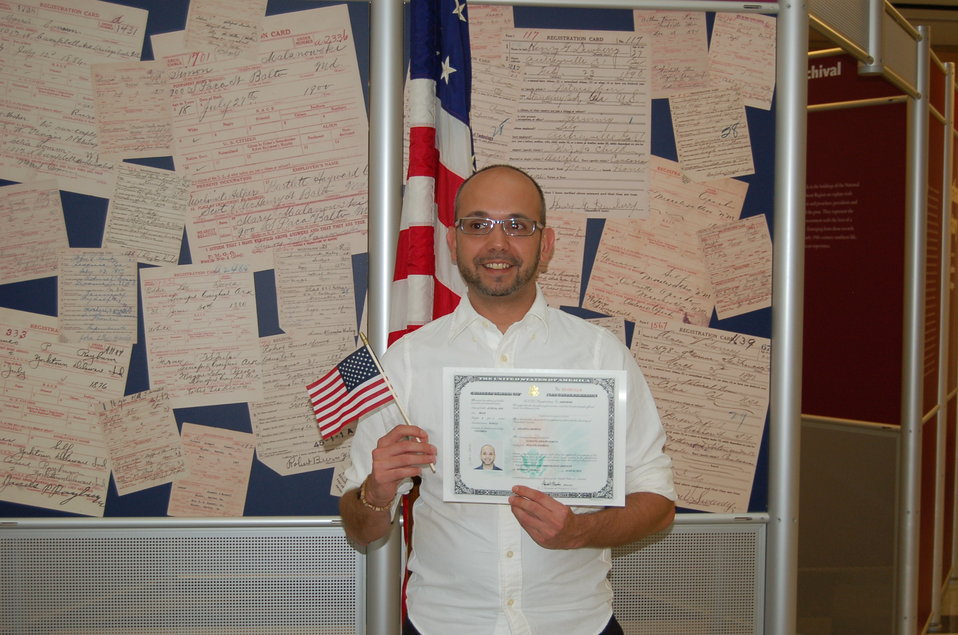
DSC 0452New Citizens